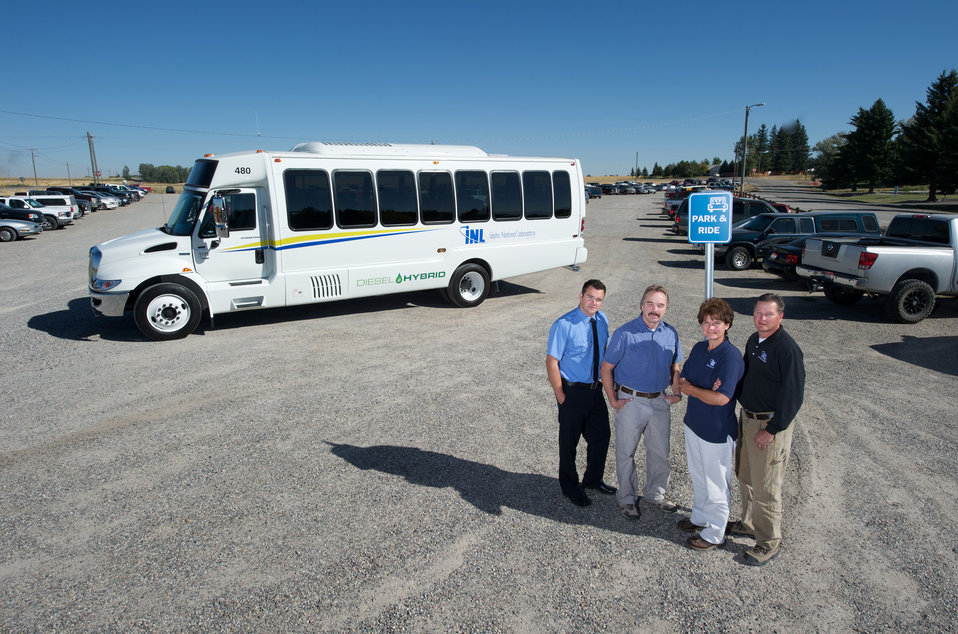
In front of one of the Idaho National Laboratory's new hybrid buses, is the team that won a Green Gov Presidential Award.